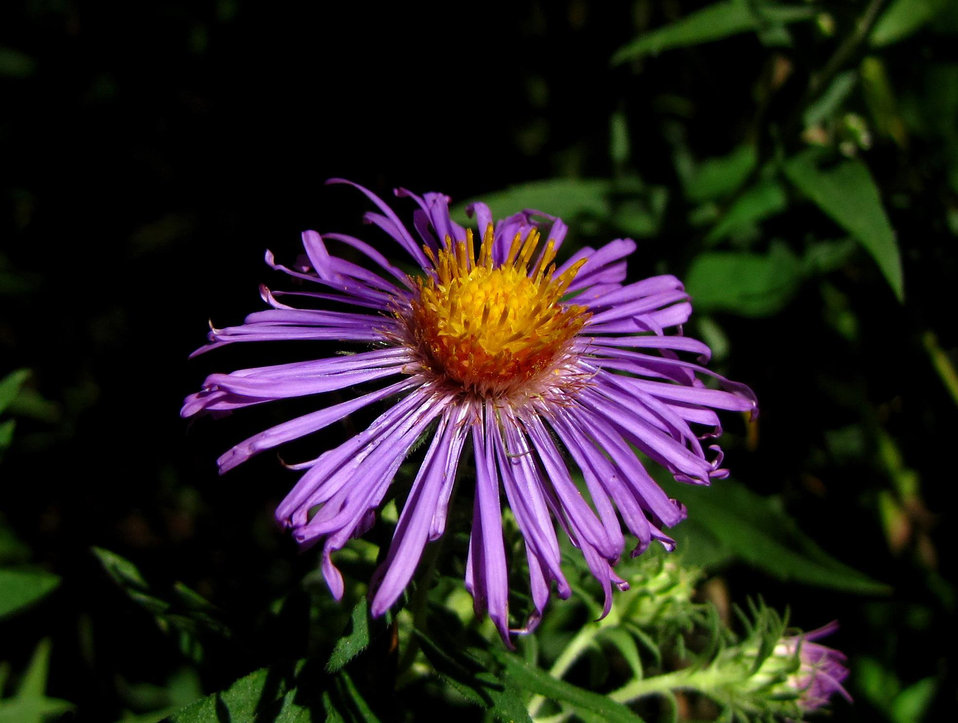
New England aster

Port Louisa National Wildlife Refuge, IA